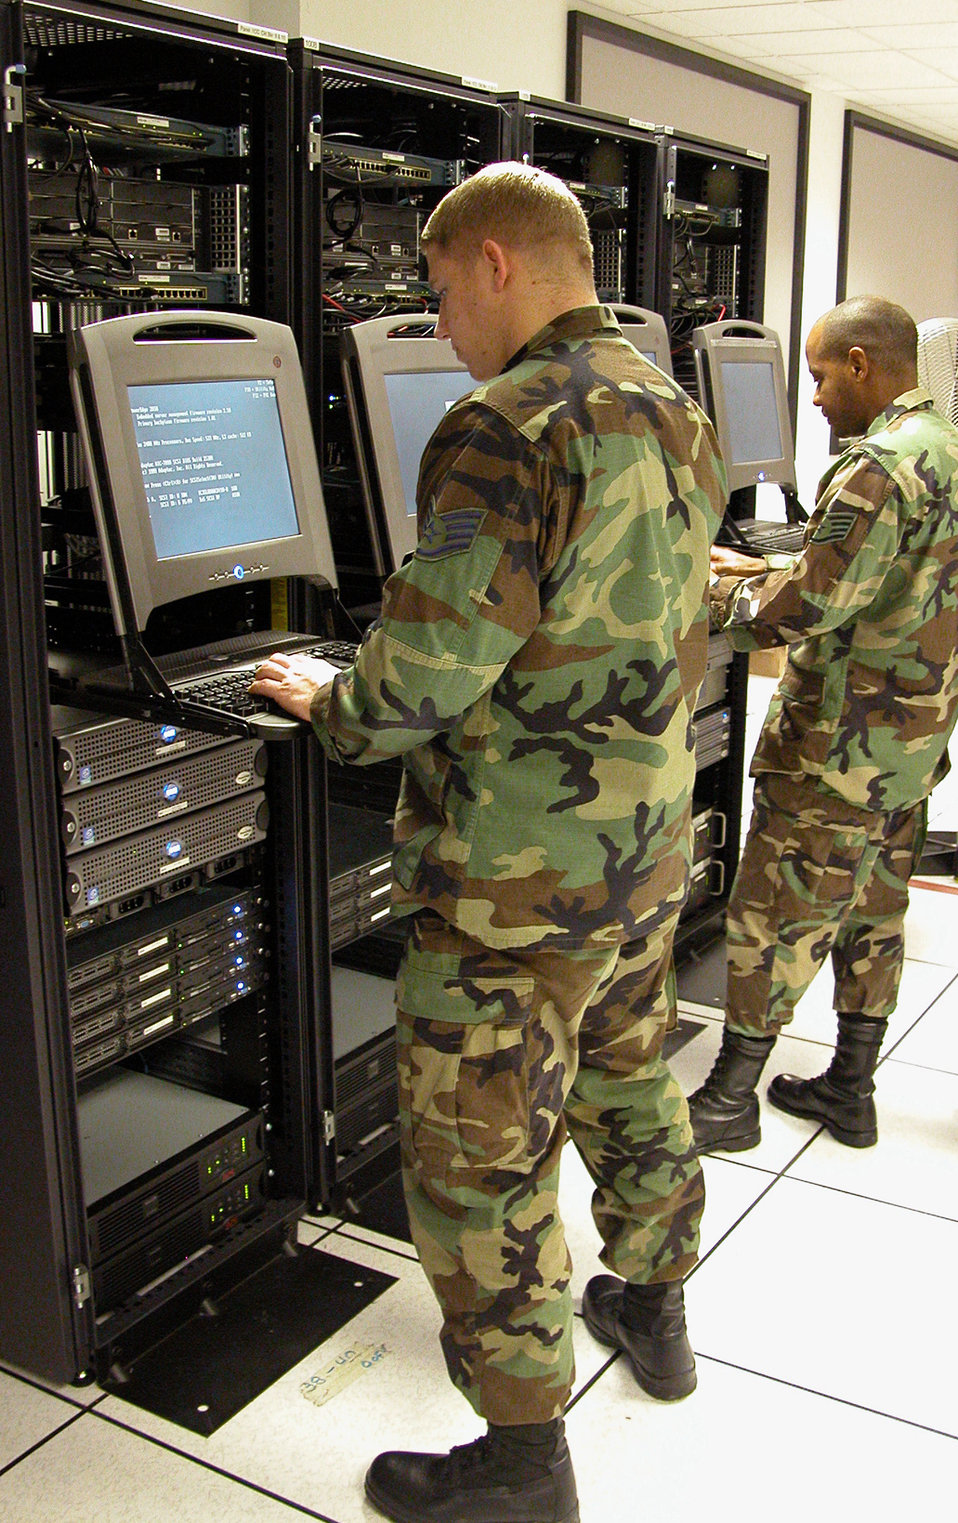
Communicators train to face enemies on digital battlefield

SCOTT AIR FORCE BASE, Ill. -- Staff Sgts. John Cooper (left) and David Jackson from the Air Mobility Command network operations and security center battle "hackers" in Air Force Communications Agency's technology interoperability facility here.